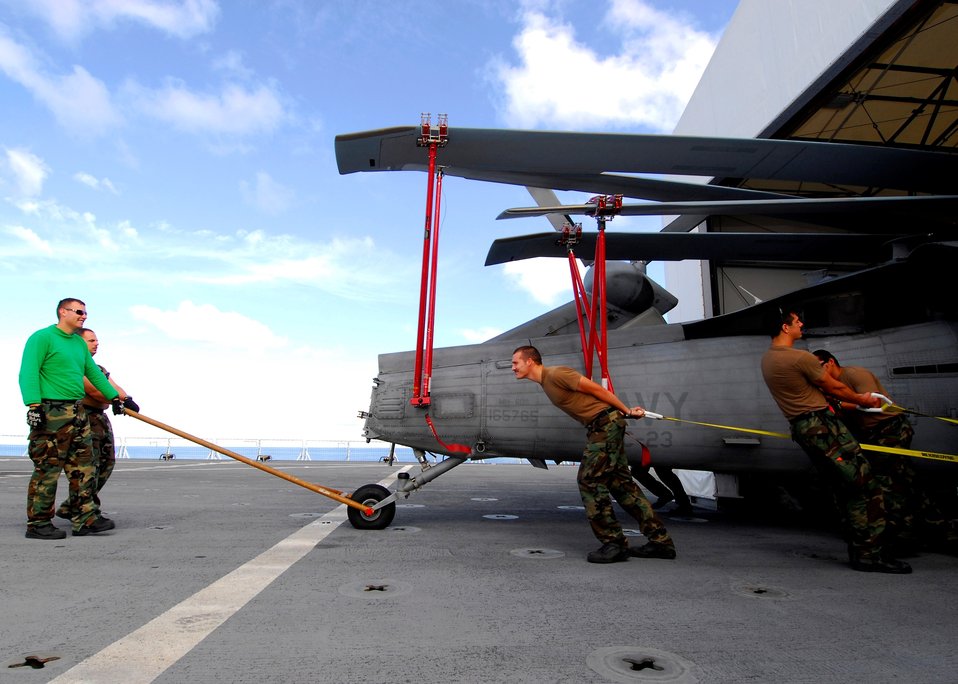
Members from Helicopter Sea Combat Squadron 23 “Wild Cards” pull an MH-60S Knighthawk helicopter across the flight deck of the Military Sealift Command hospital ship USNS Mercy (T-AH 19) in order to spot the aircraft for launch on July 8, 2010. Mercy is conducting Pacific Partnership 2010, the fifth in a series of annual U.S. Pacific Fleet humanitarian and civic assistance endeavors to strengthen regional partnerships.